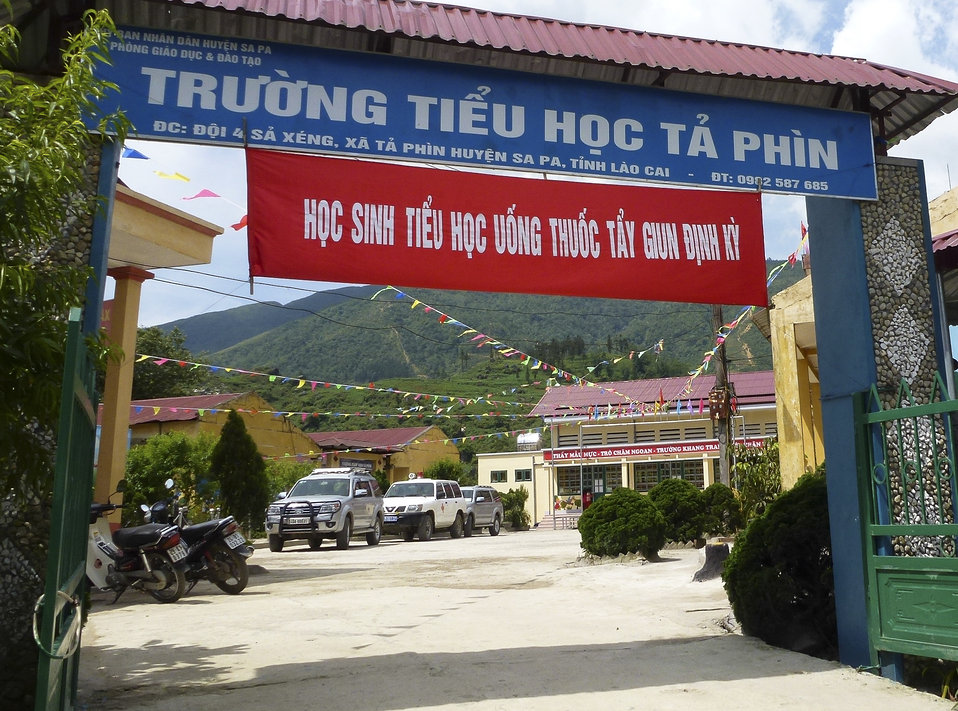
USAID supports deworming medication for school children in Sa Pa district of Lao Cai province

May 13, 2014.